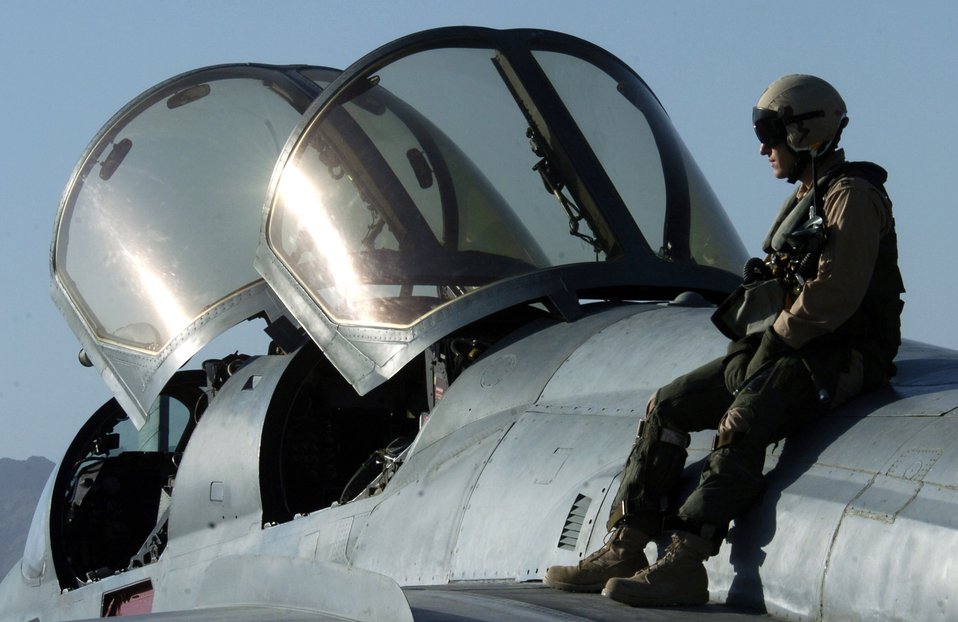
On the prowl

Air Force Capt. Matthew Polus sits on a Navy EA-6B Prowler before takeoff from Bagram Air Base, Afghanistan, on Thursday, June 15. Air Force and Navy crewmembers fly the Prowler, providing support to ground troops in Afghanistan.